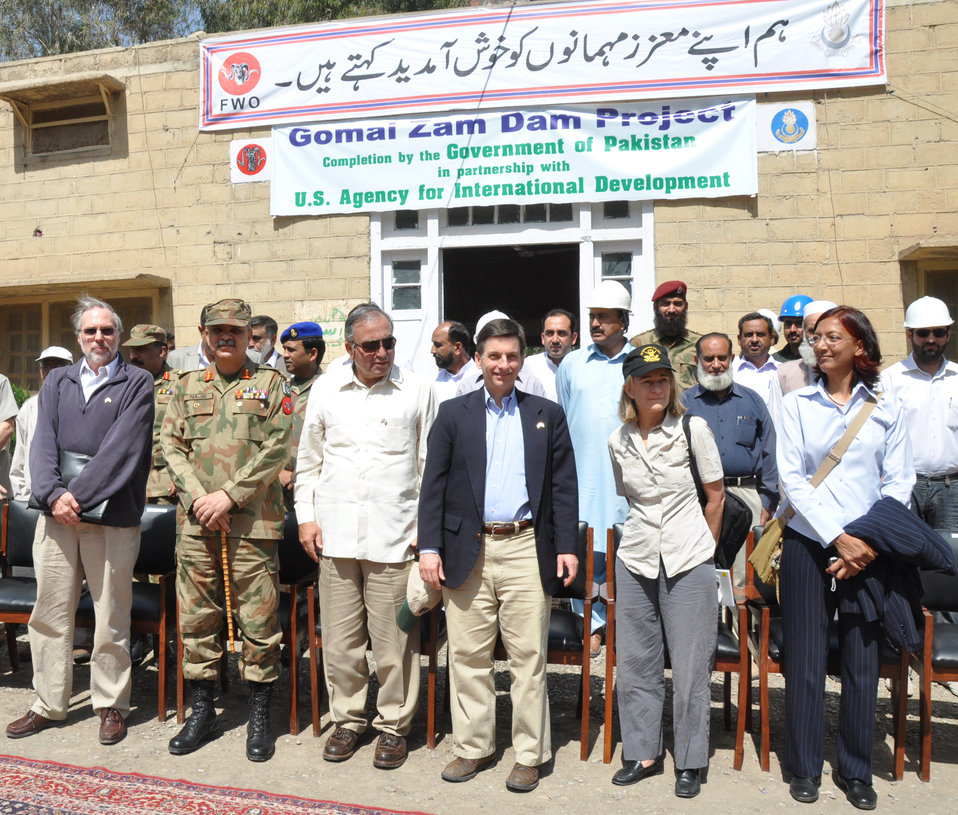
Gomal Zam Dam

April 21, 2011 - Mr. David McCloud, Deputy Director, USAID’s Office of Afghanistan-Pakistan Affairs, Major General Najeeb Ullah Khan, Director General of the Frontier Works Organization, Shakil Durrani, WAPDA Chairman, and Andrew Sisson, USAID’s Pakistan Mission Director along with other distinguish guests at the Gomal Zam Dam offices. The United States Agency for International Development (USAID) is providing $40 million to finance the completion of the dam, transmission line, and hydropower components of the project.